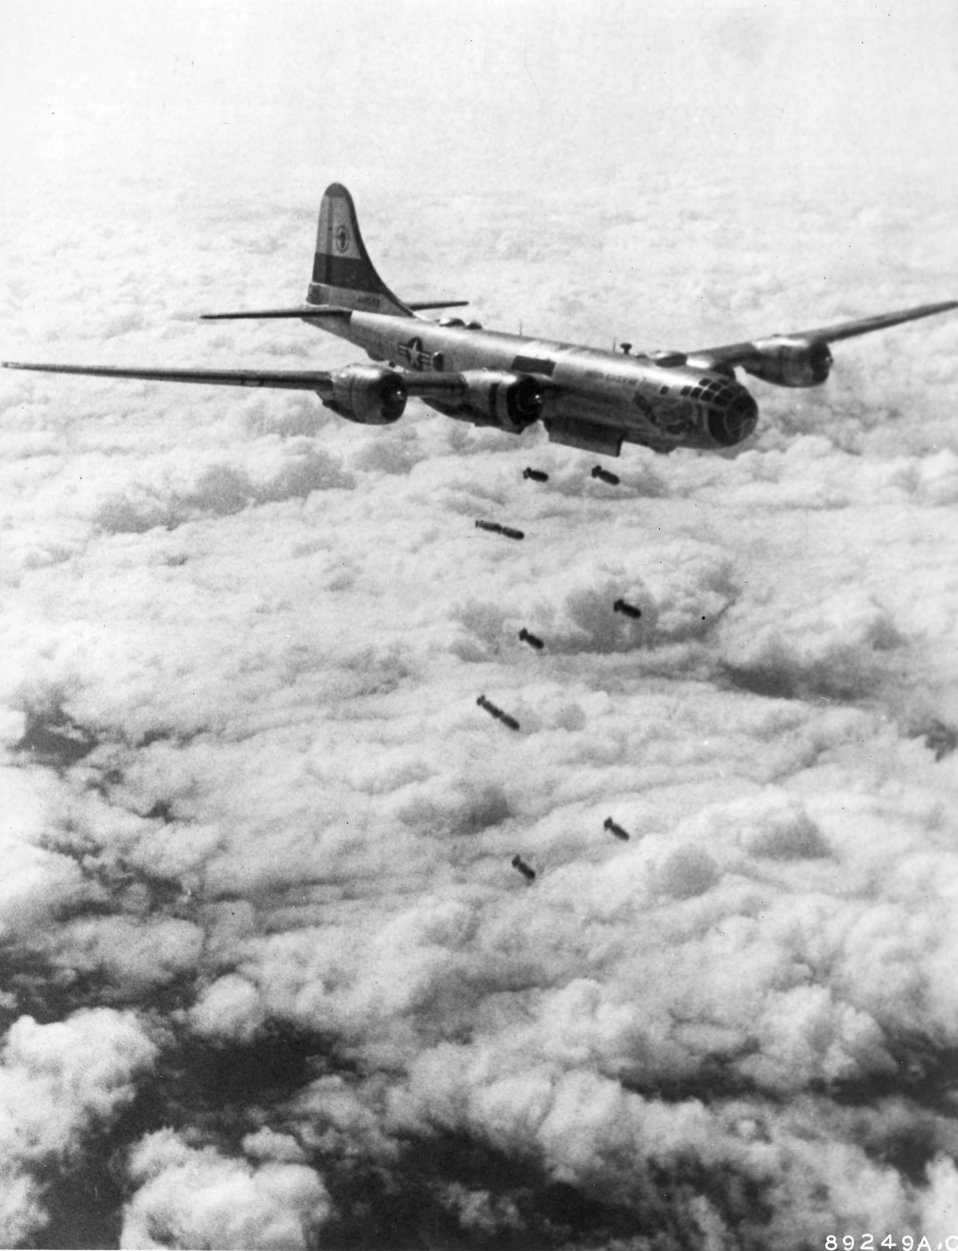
B-29

1950's -- Husky 1,000-pound demolition bombs hurtle from this U.S. Far East Air Forces B-29